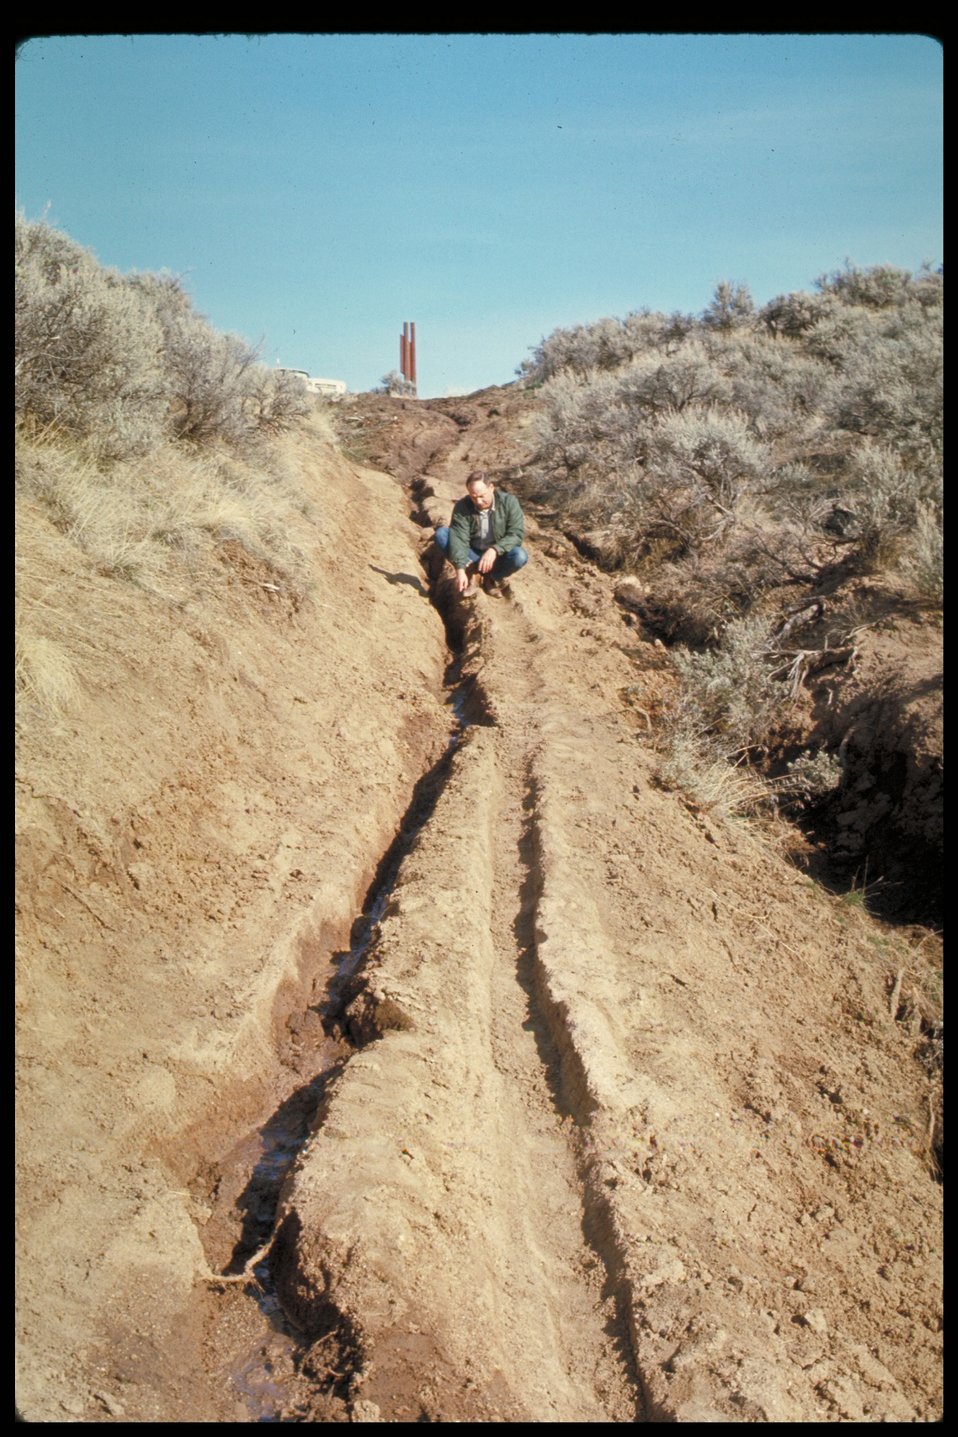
Motorcycle trail from parking lot off 8th St Road OHV Off Highway Vehicles Four Rivers Field Office LSRD Lower Snake River District